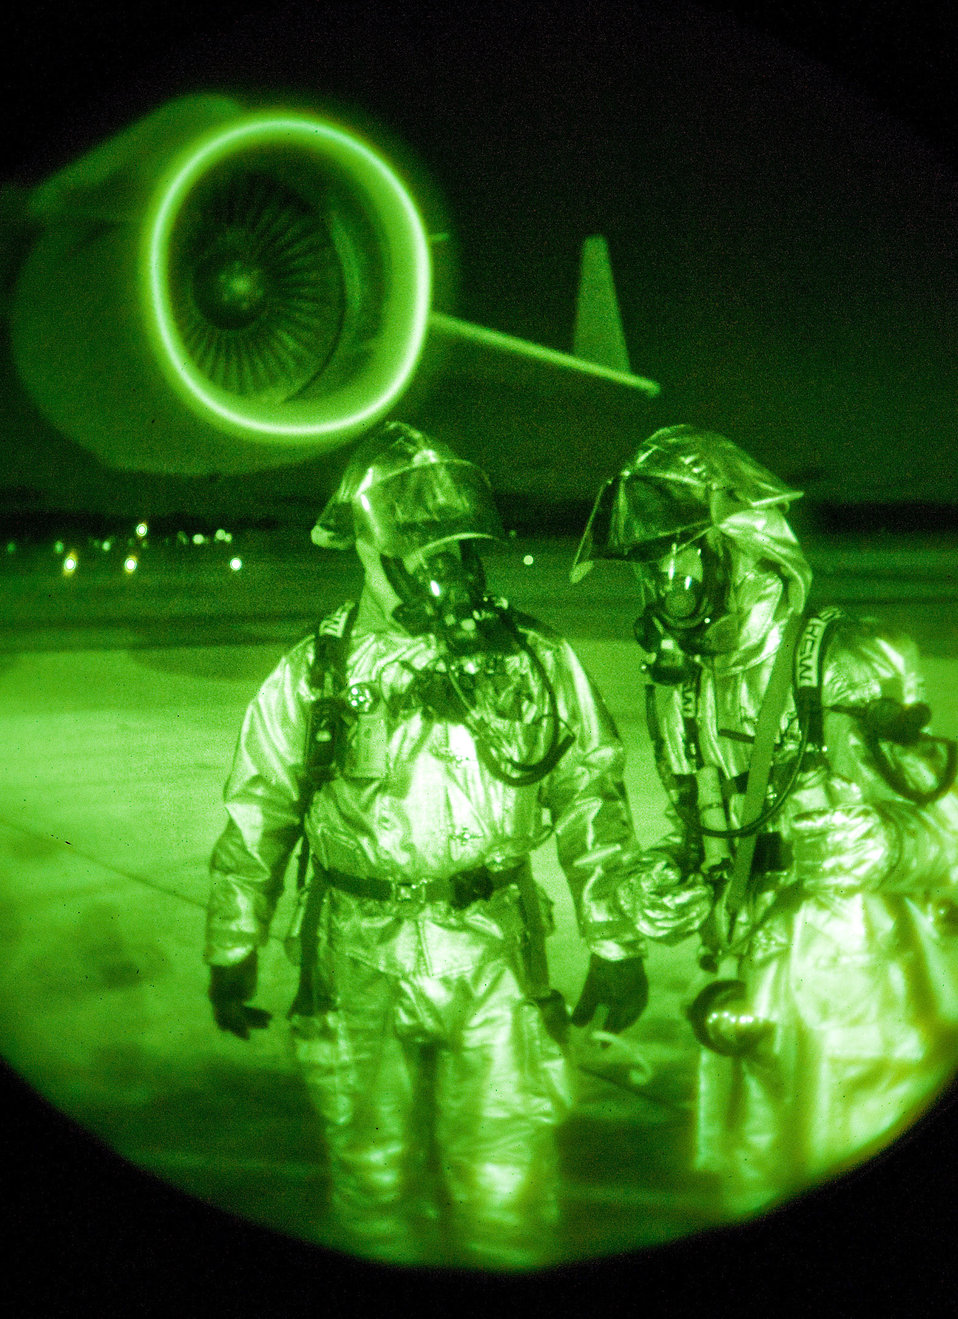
24/7 response

Two firefighters respond to a simulated aircraft accident April 9 at Dover Air Force Base, Del., during a major accident response exercise. The Airmen are assigned to the 436th Civil Engineer Squadron.